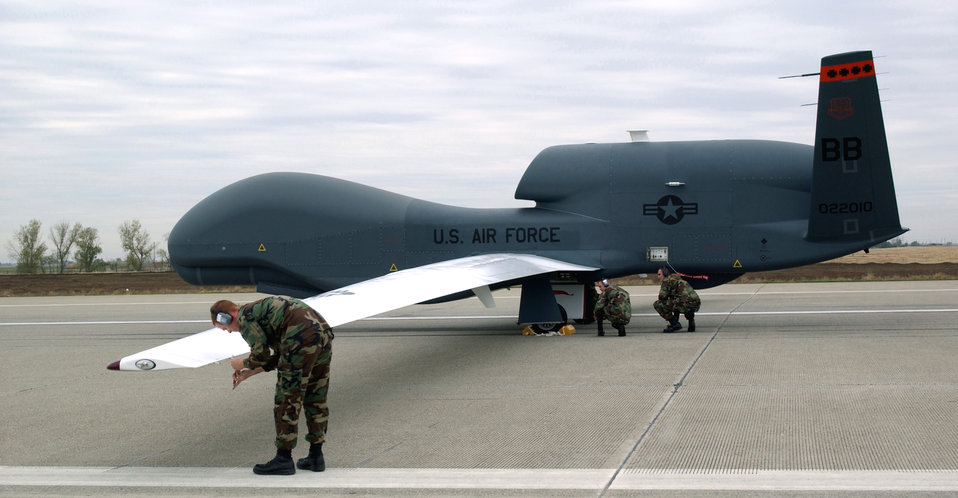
'Global' presence at Beale

BEALE AIR FORCE BASE, Calif. -- Airmen here check over a Global Hawk Unmanned Aerial Vehicle recently. The aircraft is the first assigned to the 12th Reconnaissance Squadron and will be used to support worldwide contingencies. Cruising at more than 65,000 feet, the Global Hawk is used to provide Air Force and joint battlefield commanders near real-time, high-resolution intelligence, surveillance and reconnaissance imagery.